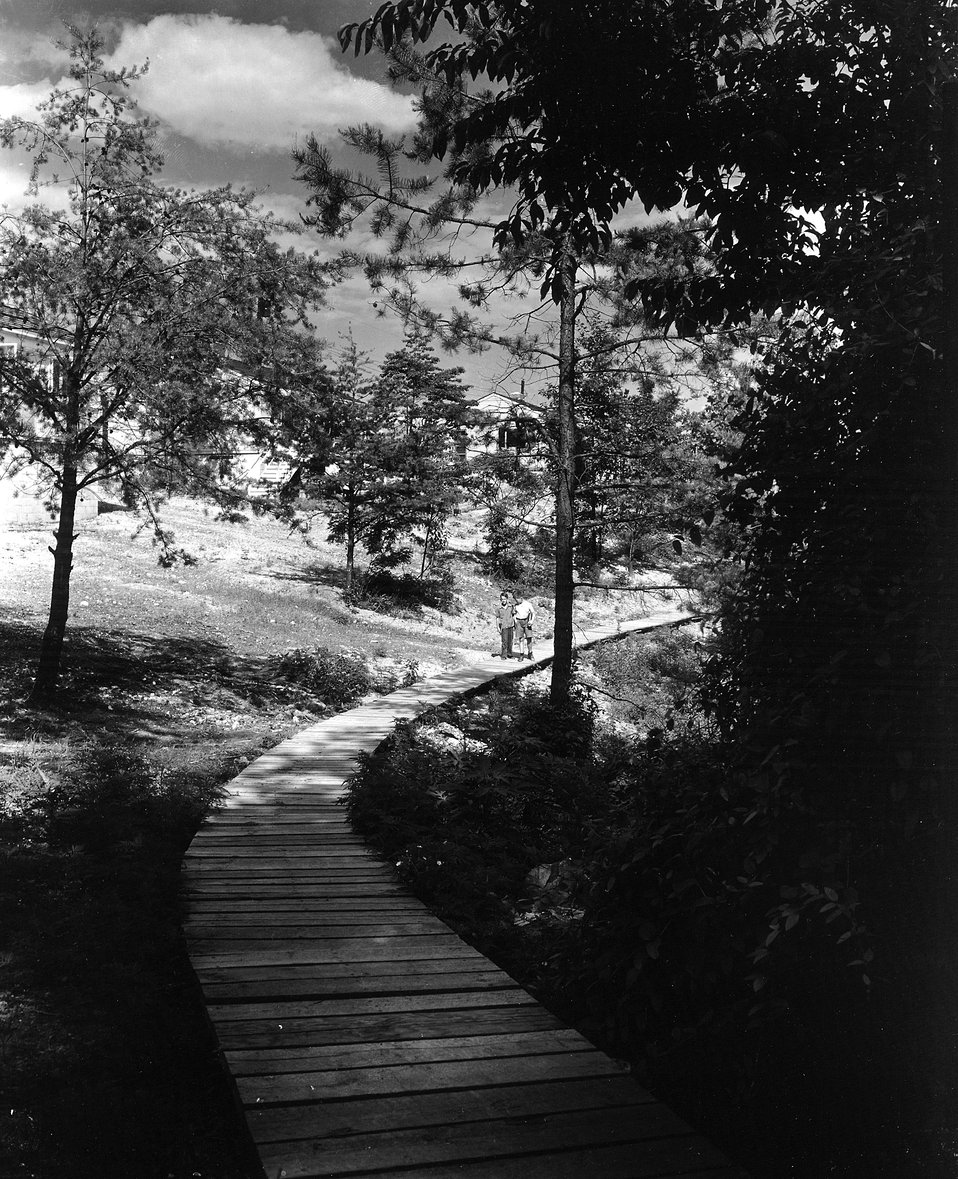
Board Walk. c. 1944